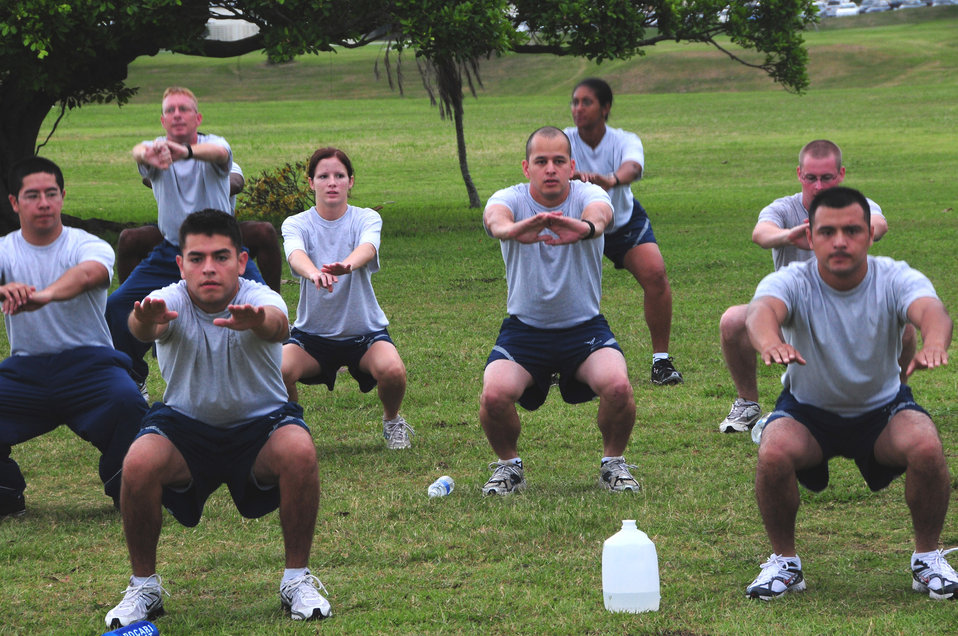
Bringing it back to basics

Members of the vehicle maintenance flight of the 18th Logistics Readiness Squadron perform squat thrust as part of their routine stretches before a typical 5K run Sept. 16, 2009, at Kadena Air Base, Japan. With their three-day-a-week PT program, they incorporate a team building day every Thursday to establish camaraderie and team concepts.